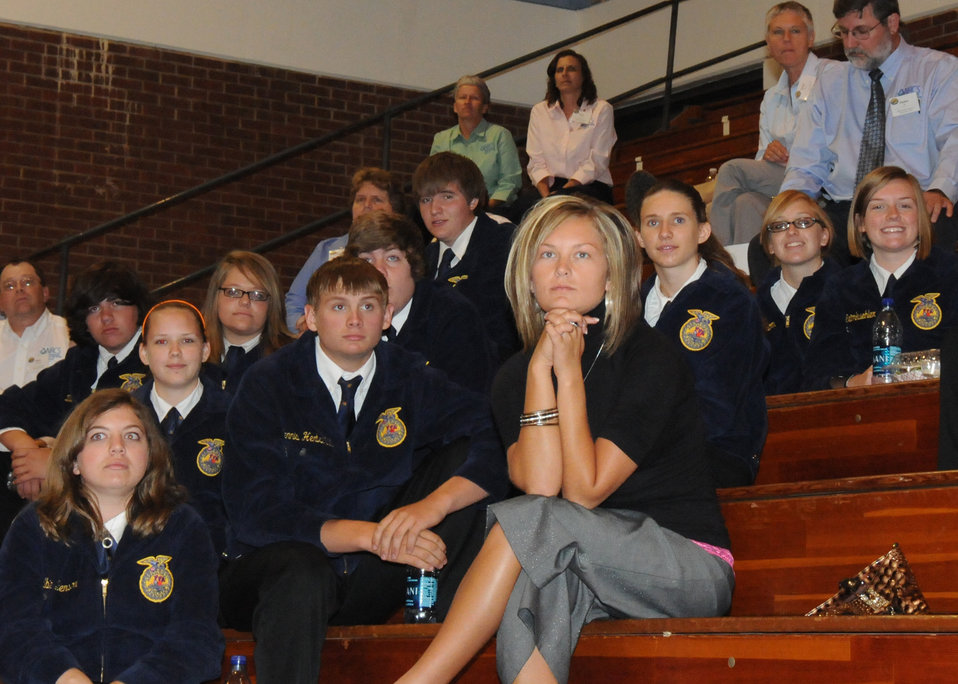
Members of the audience listen to speakers at the USDA Rural Summit held at Jefferson College in Hillsboro, MO., on Thursday, June 3, 2010. USDA Photo 10di1387-46.